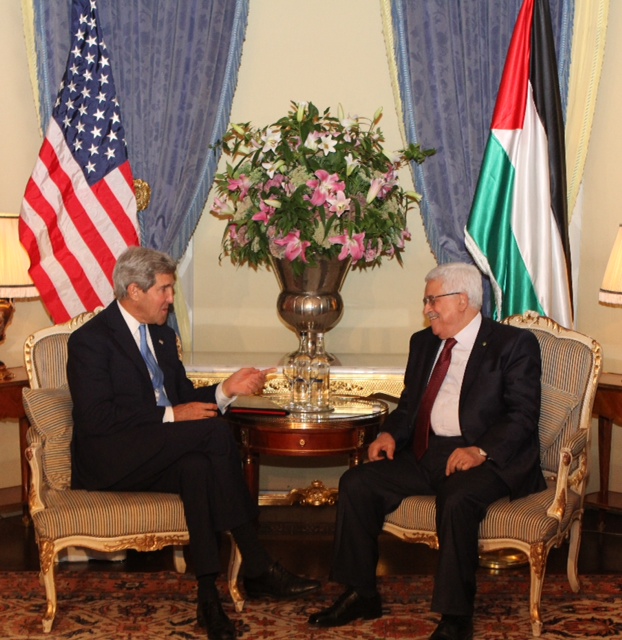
Secretary Kerry Meets With Palestinian Authority President Abbas

U.S. Secretary of State John Kerry meets with Palestinian Authority President Mahmoud Abbas in London, United Kingdom on September 8, 2013.